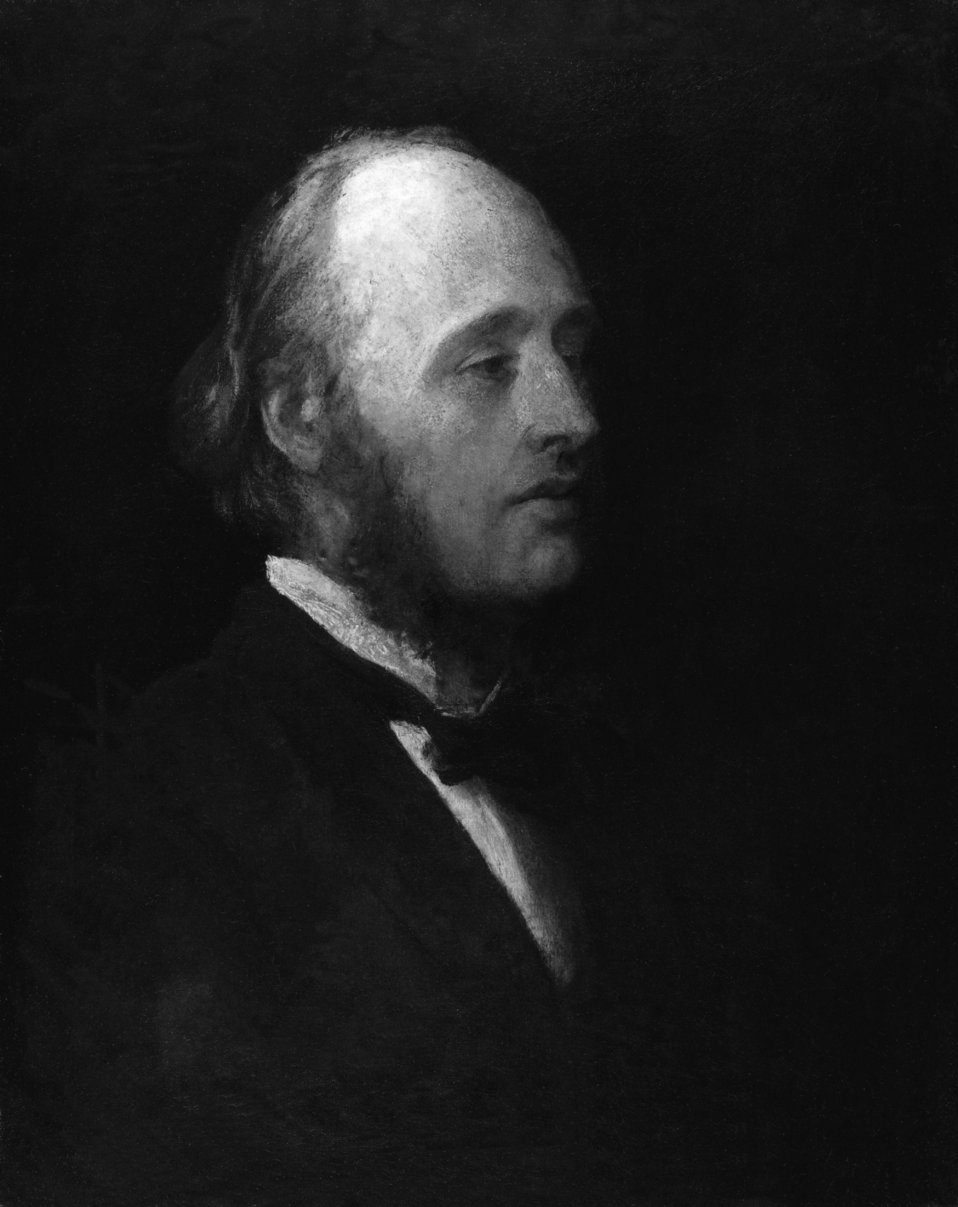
(William) Edward Hartpole Lecky, by George Frederic Watts (died 1904), given to the National Portrait Gallery, London in 1903. See source website for additional information. This set of images was gathered by User:Dcoetzee from the National Portrait Gallery, London website using a special tool. All images in this batch have been confirmed as author died before 1939 according to the official death date listed by the NPG.